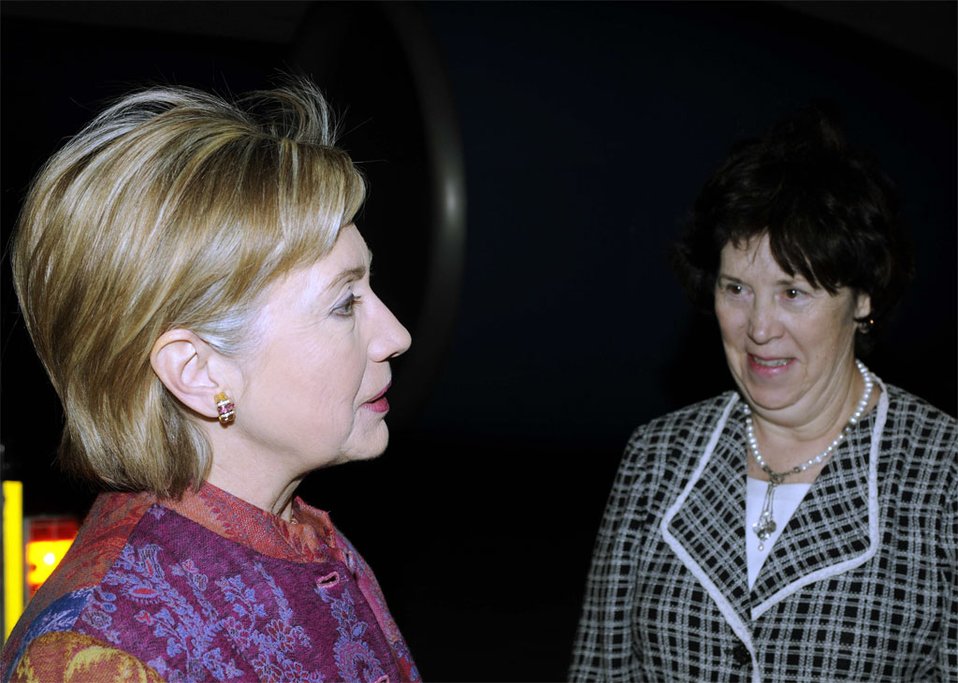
Secretary Clinton Arrives in Egypt

Secretary Clinton and U.S. Ambassador to Egypt Margaret Scobey in Sharm el-Sheikh, Egypt March 1, 2009.